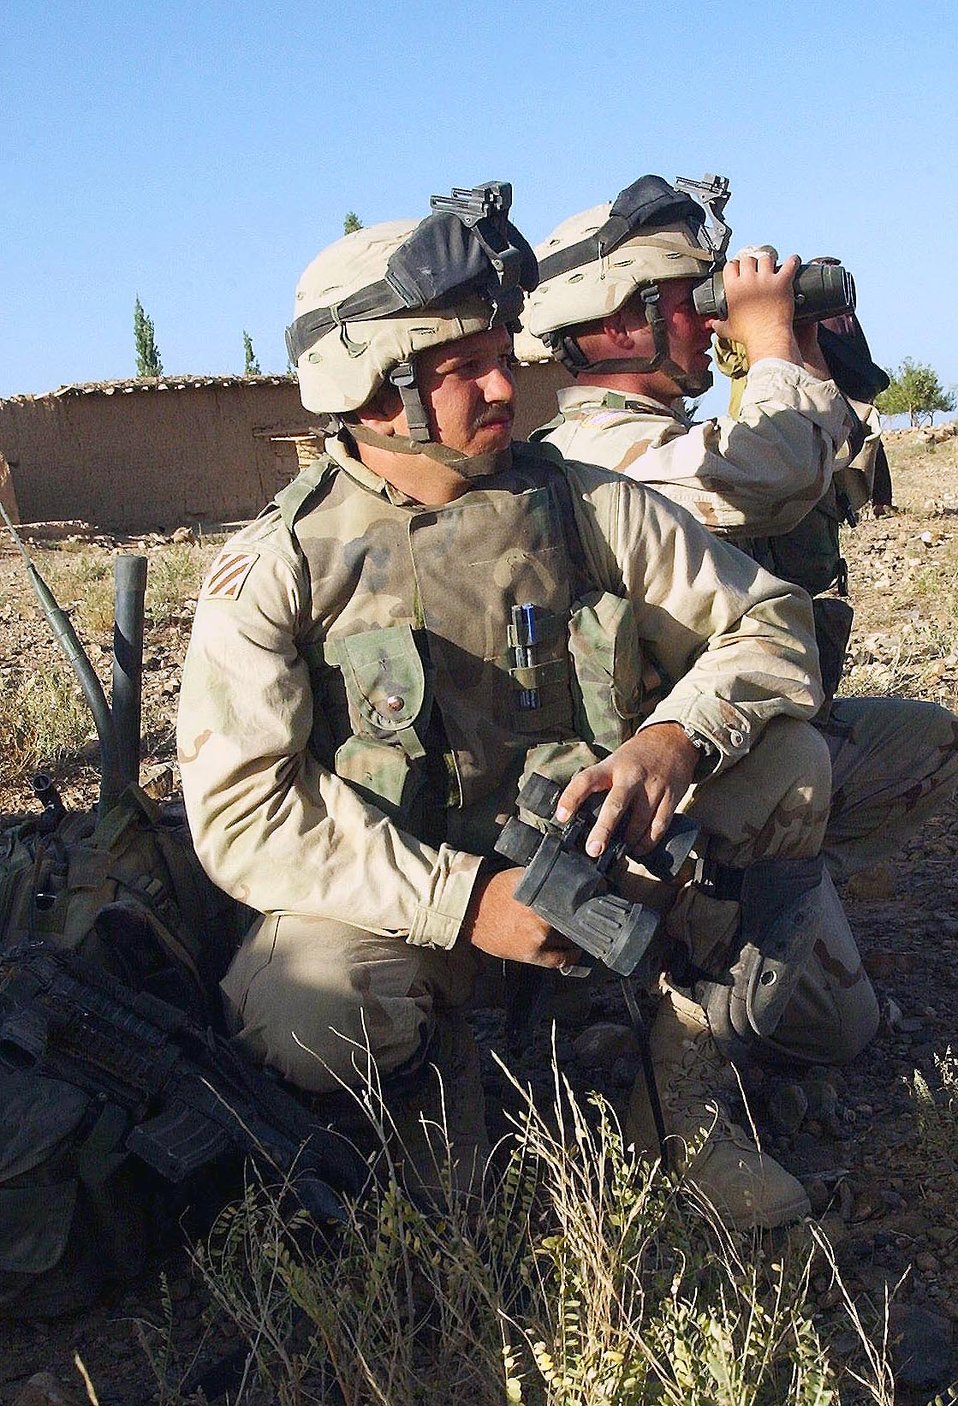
Searching for al-Qaida

SHKIN FIRE BASE, Afghanistan -- Staff Sgt. Travis Stricker (left) and Airman 1st Class Justin Pilant look into Pakistan from an area near here, in search of al-Qaida terrorists who launched a rocket attack on their base. If the airmen make contact with the enemy, they will use their radios to direct an air strike on the target. Both airmen are deployed from the 20th Air Support Operations Squadron at Fort Drum, N.Y.